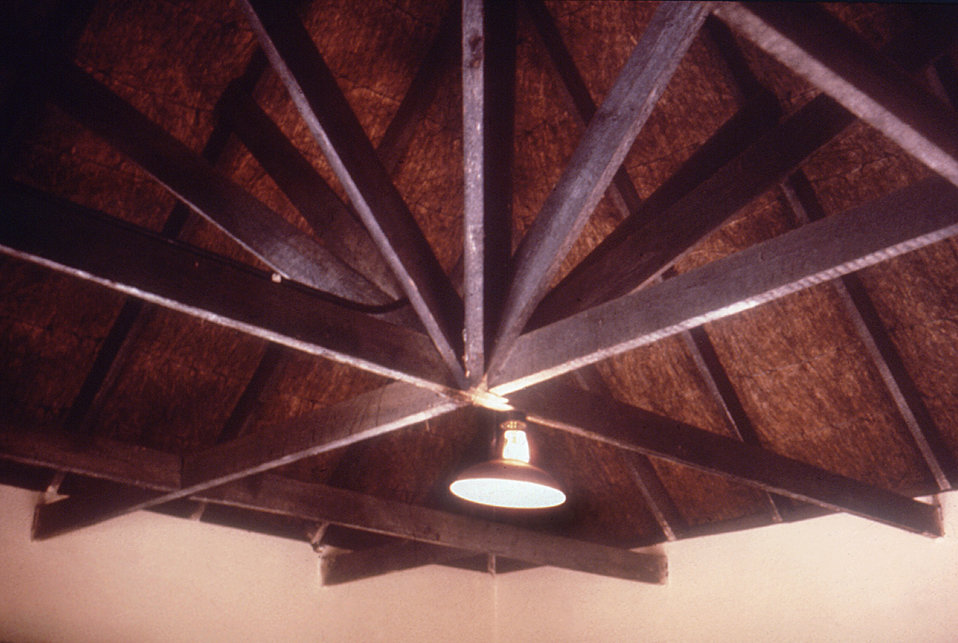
This was the ceiling of a rondaval, e.g., see PHIL ID# 6302, during a 1975 CDC South African Marburg virus investigation.